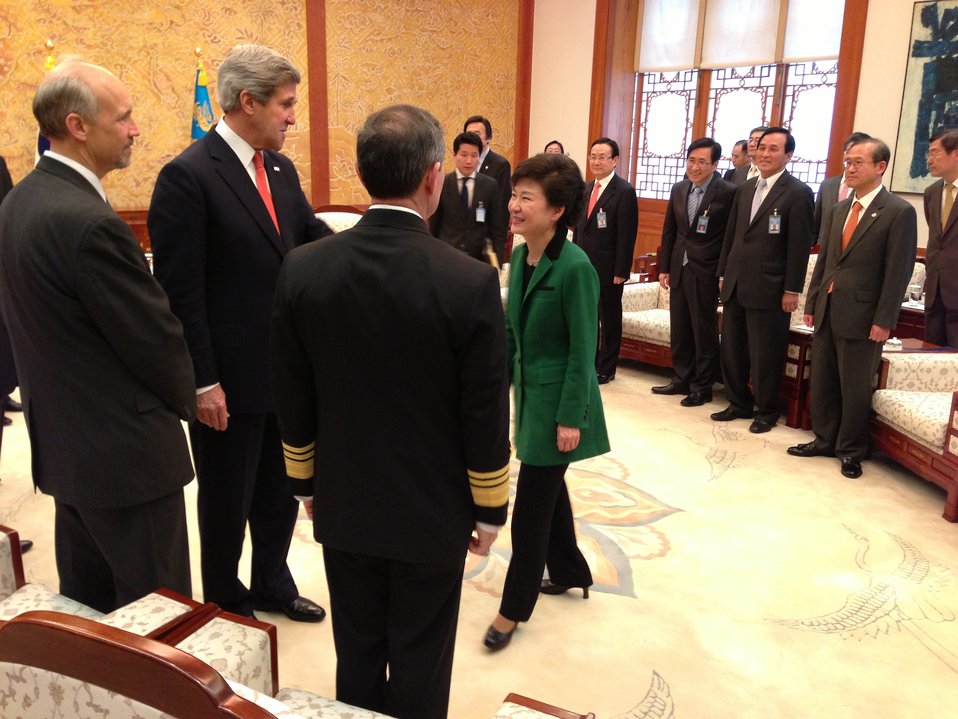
Secretary Kerry Introduces Admiral Harris to President Park Geun-hye

U.S. Secretary of State John Kerry introduces Admiral Harry Harris to South Korean President Park Geun-hye before their discussions at the Blue House in Seoul, South Korea, on April 12, 2013.